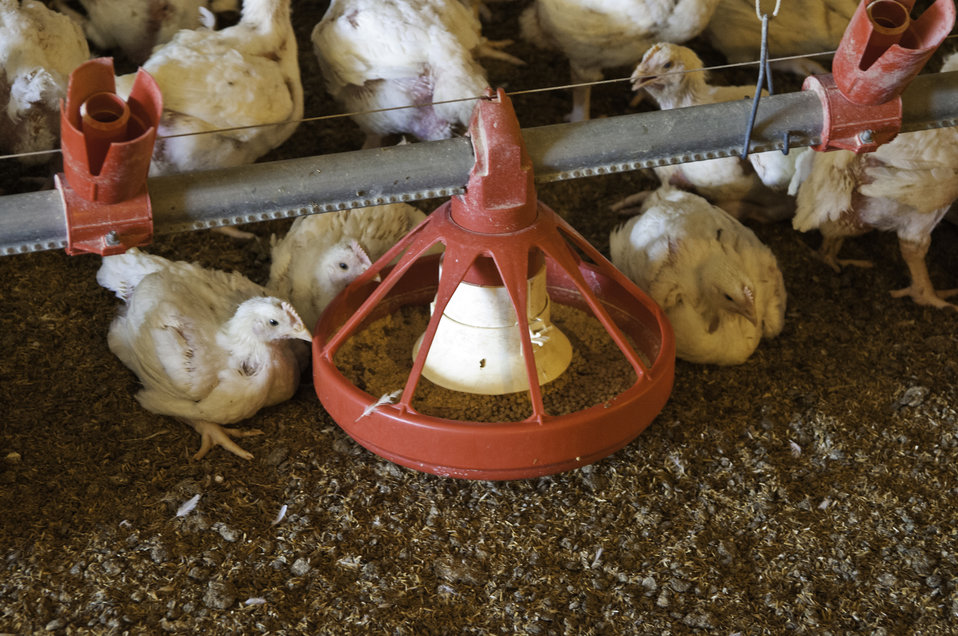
Young broilers eat at a feeder on the Bobby Morgan chicken Farm in Luling, TX on Aug. 23, 2013.